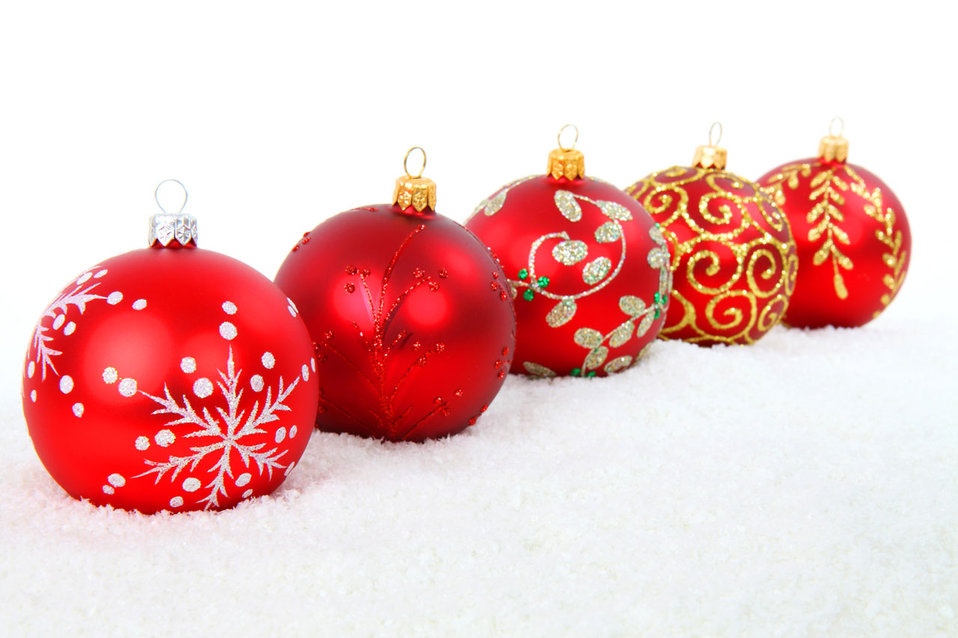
Red christmas balls

Red christmas baubles in snow isolated on white background.